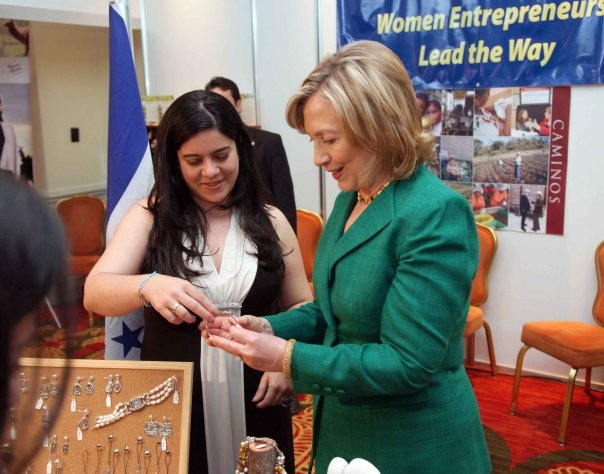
Secretary Clinton With a Woman Entrepreneur

U.S. Secretary of State Hillary Rodham Clinton interacts with a woman entrepreneur at the Pathways to Prosperity Conference in San José, Costa Rica, March 4, 2010.